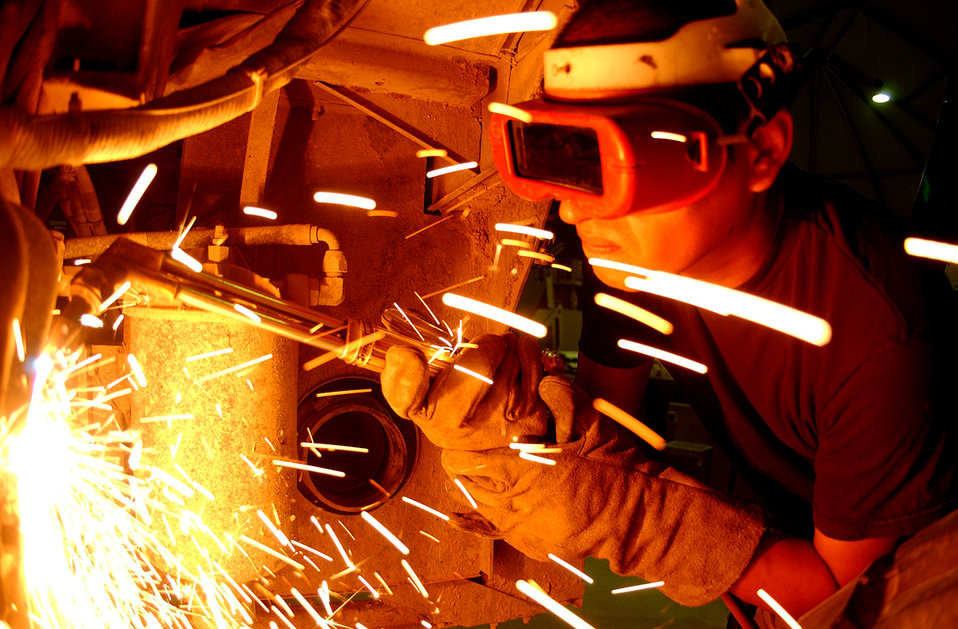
Armor up

BALAD AIR BASE, Iraq -- Staff Sgt. Ruben Bonafe cuts off an old cab mount on a truck to add armor to the convoy vehicle. He is assigned to the 732nd Expeditionary Logistics Readiness Squadron here.